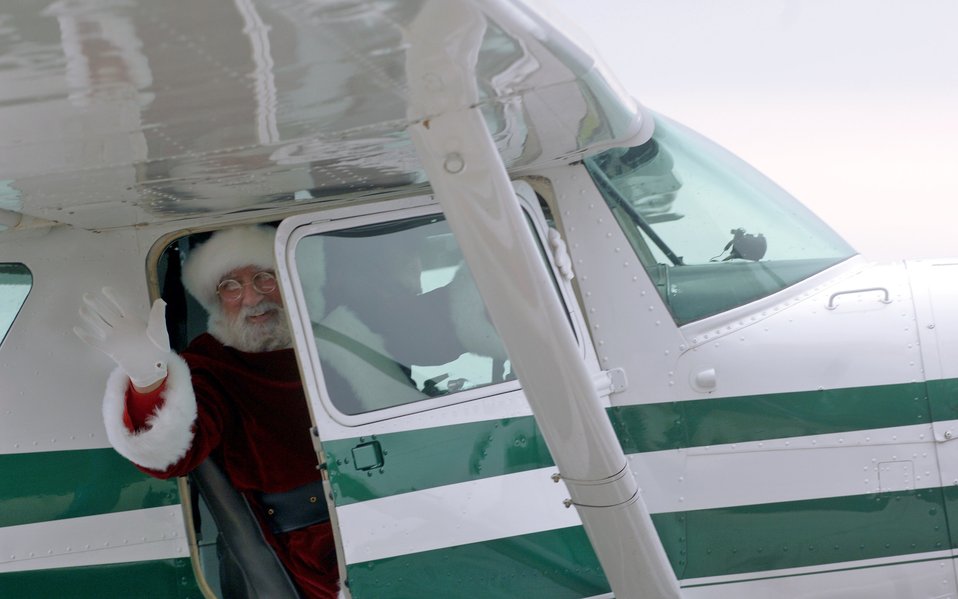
Santa brings holiday cheer to Arnold party

Santa Claus waves hello after an amphibious landing at Arnold Air Force Base, Tenn., Lakeside Club. Santa was on hand to help deliver presents for nearly 700 children at the Arnold AFB Christmas party Dec. 2.